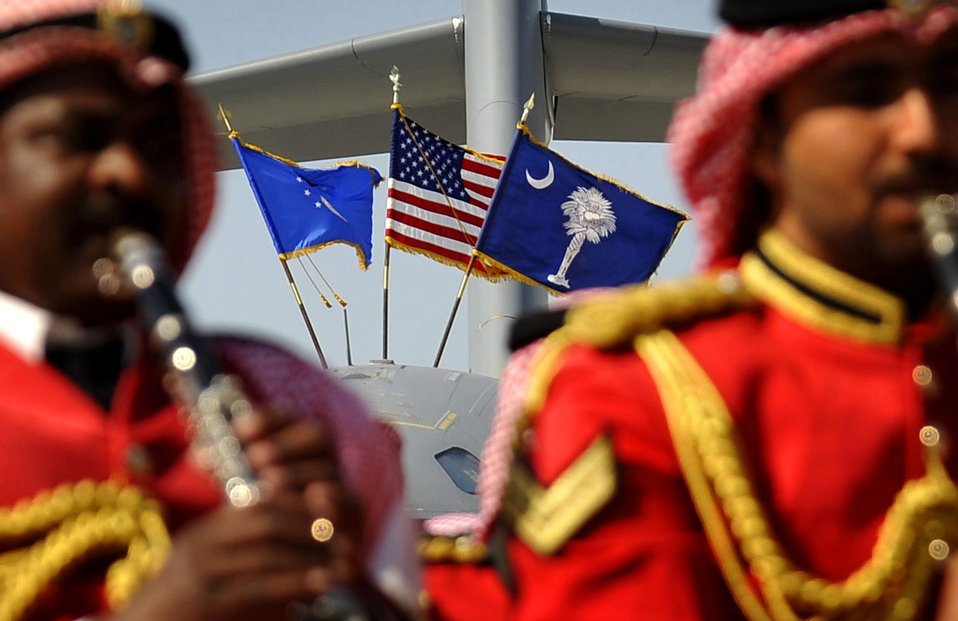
Airmen support inaugural Bahrain International Airshow

The U.S. flag, along with the Air Force and South Carolina state flag fly from on top of a C-17 Globemaster III while a Bahraini military band plays Jan. 21, 2010, at the Bahrain International Airshow.